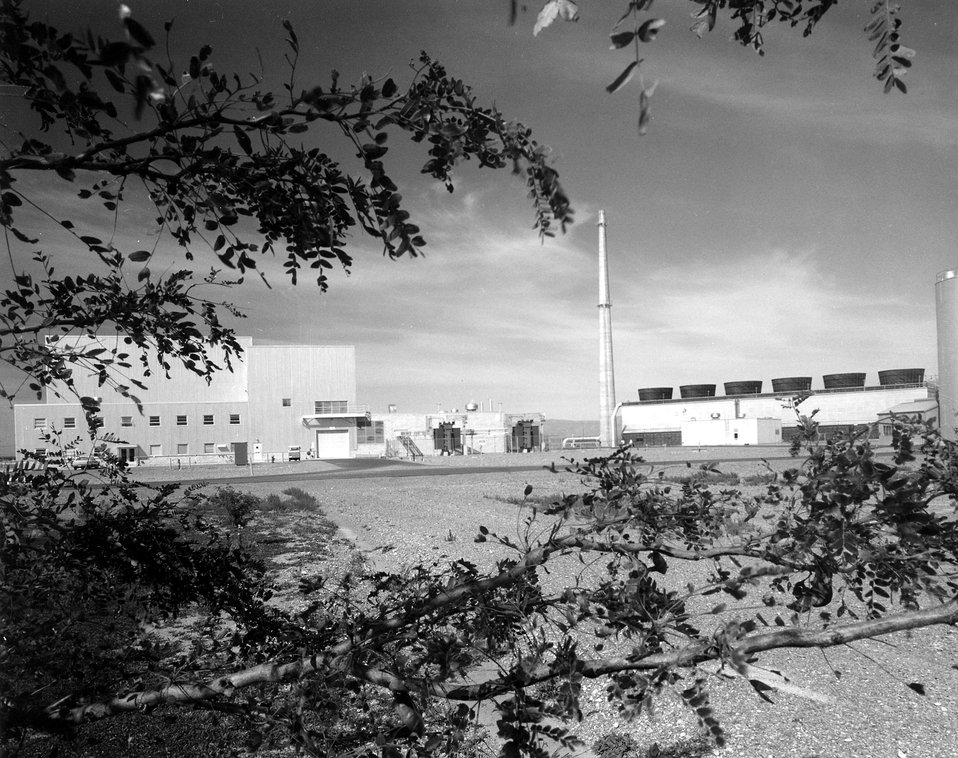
National Reactor Testing Station, Idaho... Advanced Test Reactor building, stack, and cooling tower at the National Reactor Testing Station. Circa 1970.